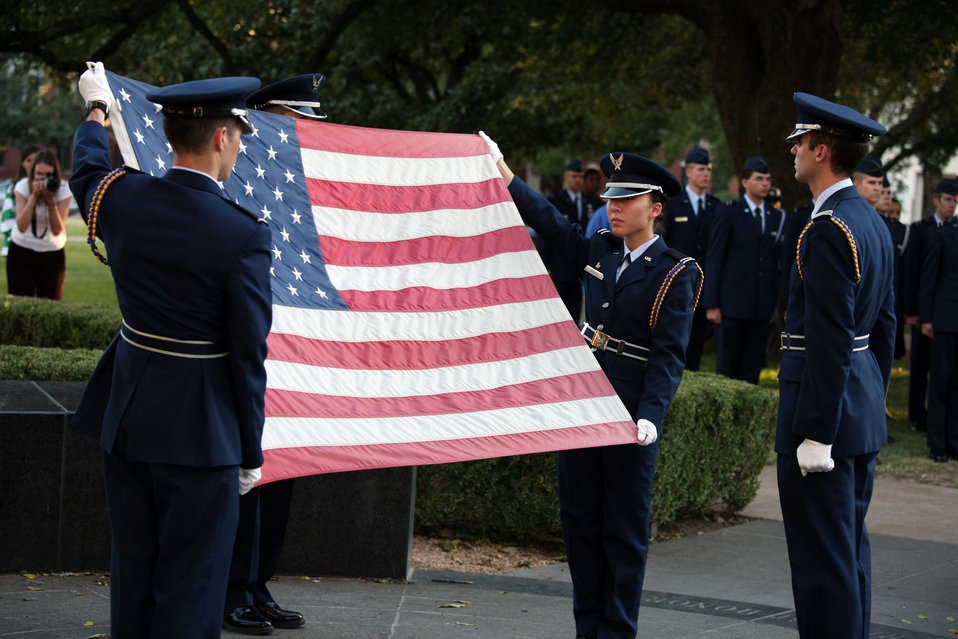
Baylor University ROTC unit celebrates 60th birthday

Baylor University Air Force Reserve Officer Training Corps Detachment 810 Cadets perform a ceremony at Baylor University in Waco, Texas, Recently. The cadets practiced laying of a memorial wreath, retiring of the colors, singing of the national anthem and a moment of silence. The unit celebrated its 60th anniversary on the Baylor campus, commissioning 1,301 second lieutenants though the program during that time.